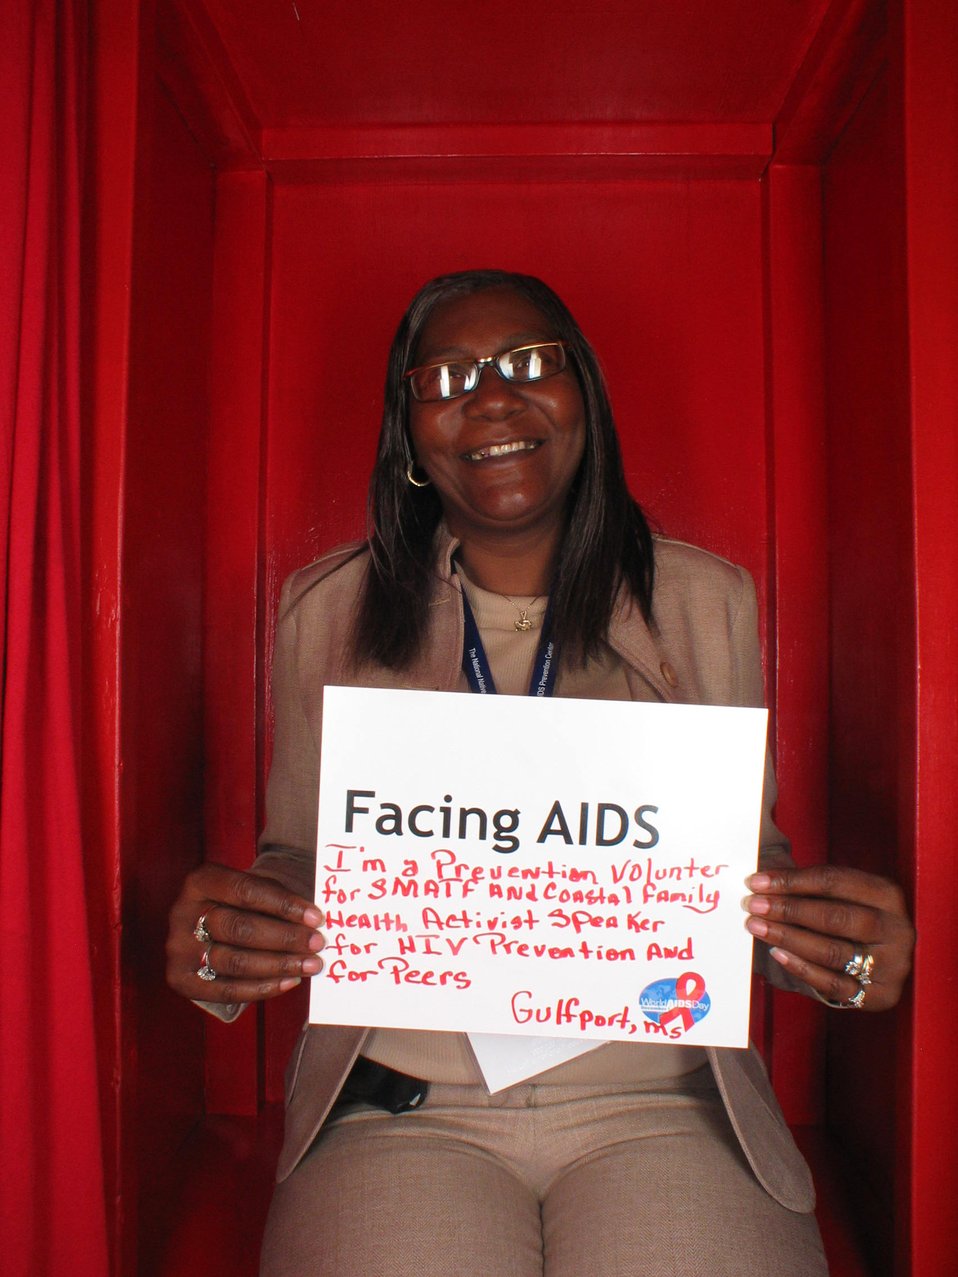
Facing AIDS I am prevention volunteer ... and speaker for HIV Prevention and for Peers.